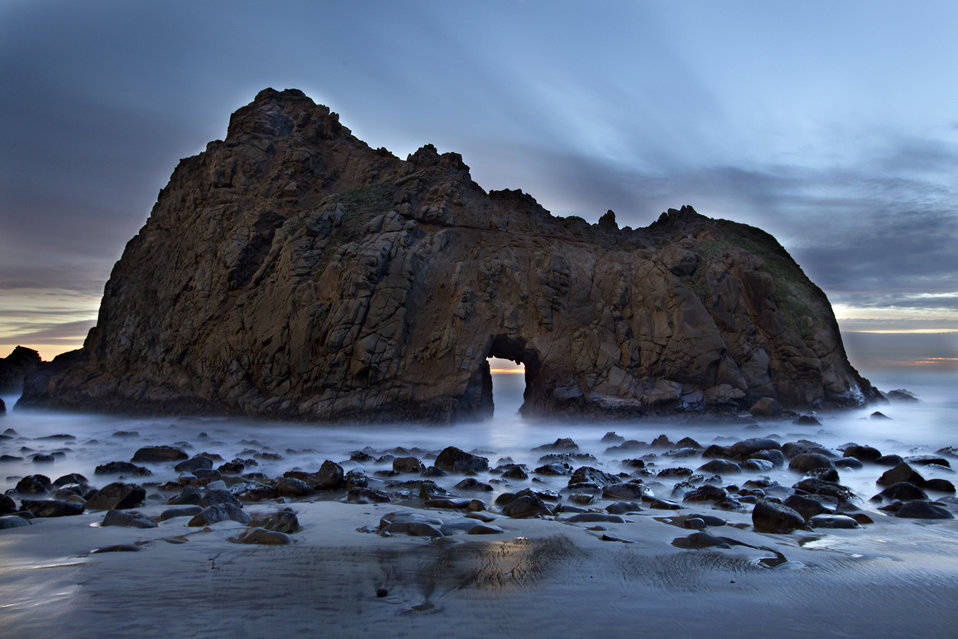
Central California Coast